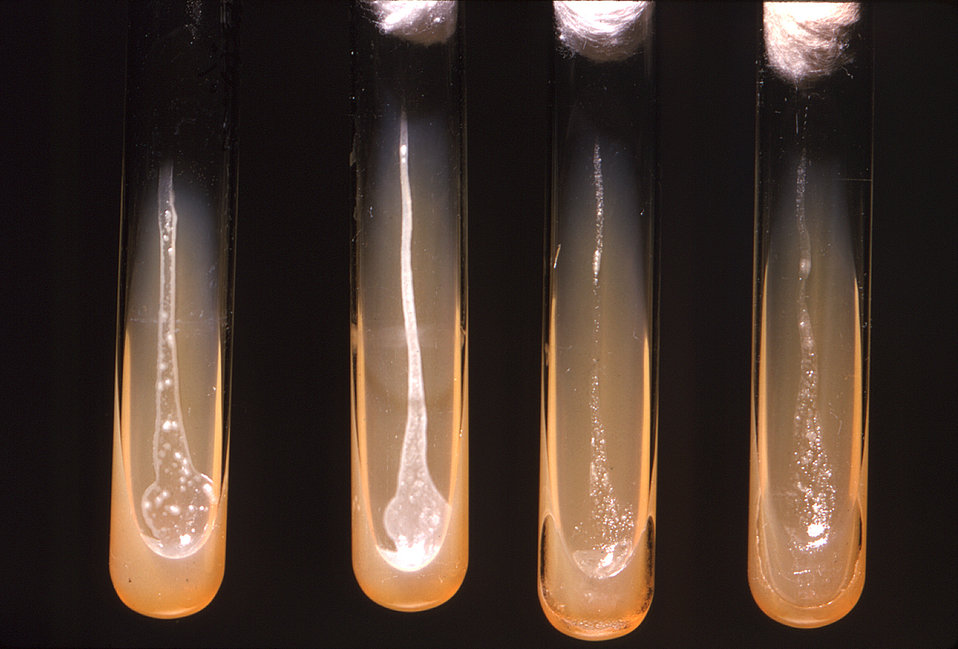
From left to right, these four test tubes represent four different growing environments within which Actinomyces viscosus bacteria were grown: aerobic (with oxygen), carbon dioxide (CO2), anaerobic (without oxygen) with CO2, and anaerobic without CO2. See PHIL 11982 for a closer view of these test tubes, and the growth patterns they contain.